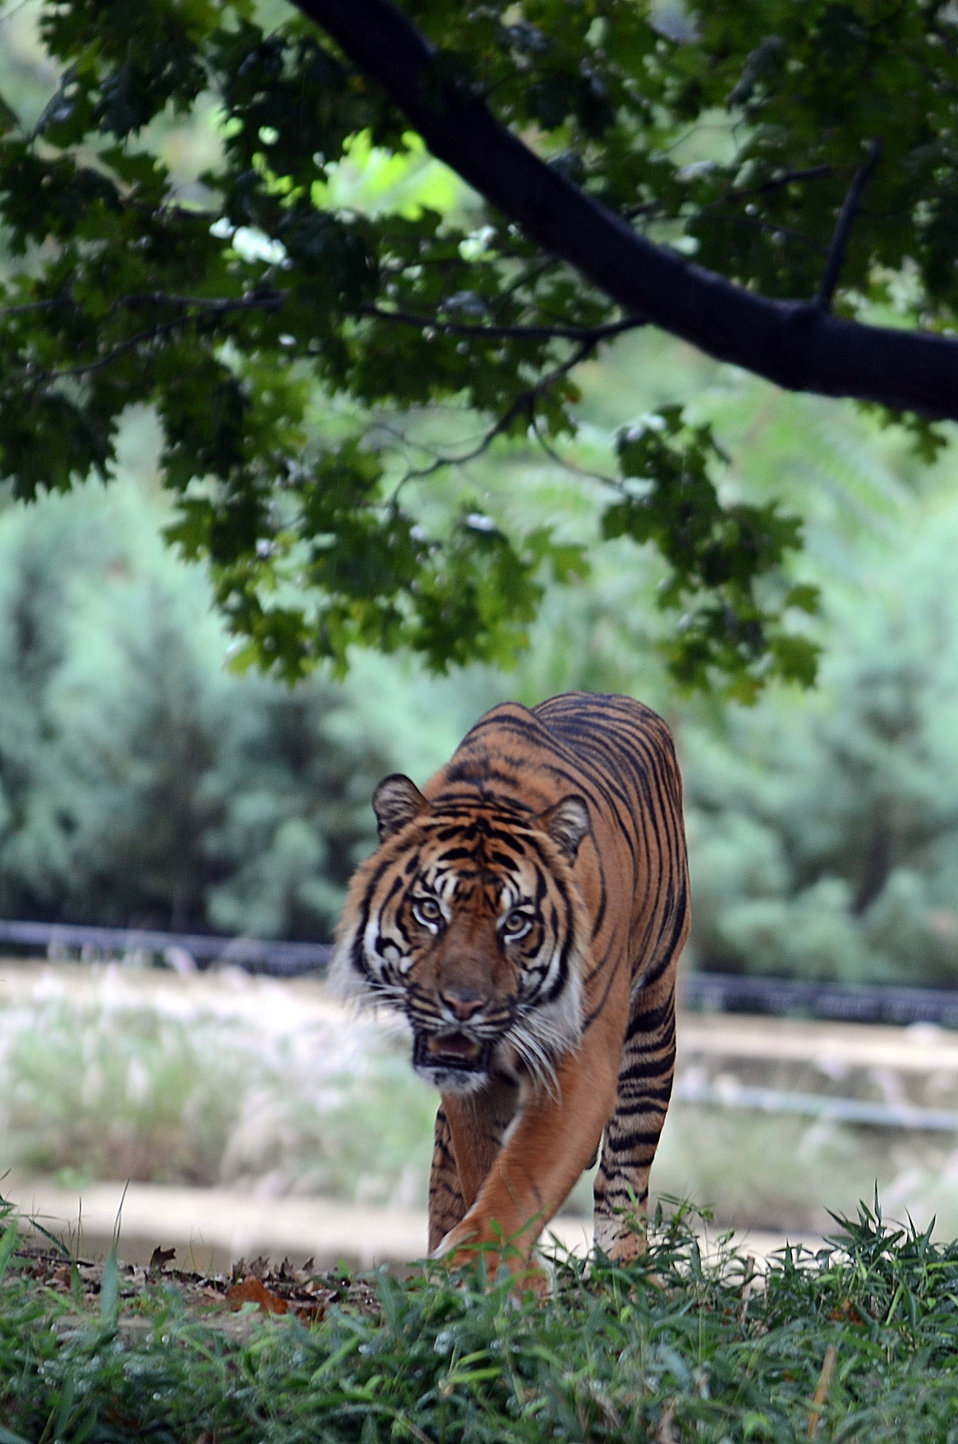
Rare Beauty

A tiger poses for the crowd at the National Zoo in Washington, D.C. (Photo: Lavonda Walton/USFWS)

Victory for wildlife! In September, 2011, the Save the Vanishing Species stamp was issued. The fourth of its kind, the semipostal stamp is helping to raise awareness -- and funds -- for wildlife in peril.